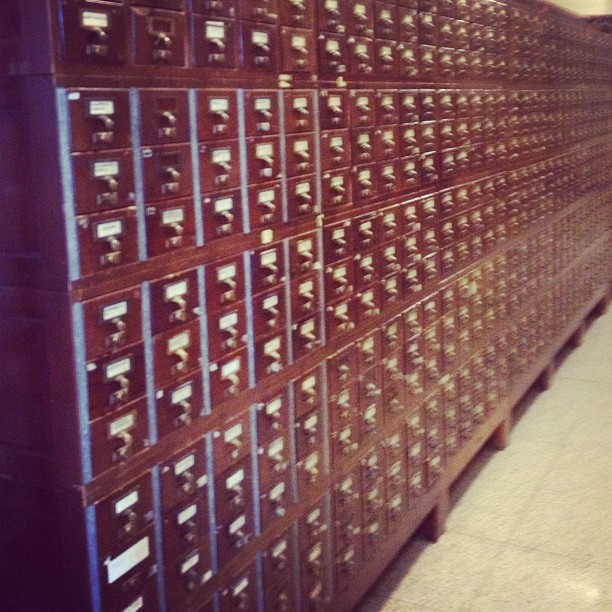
An early 'Google machine' for 180 miles of shelves @librarycongess.